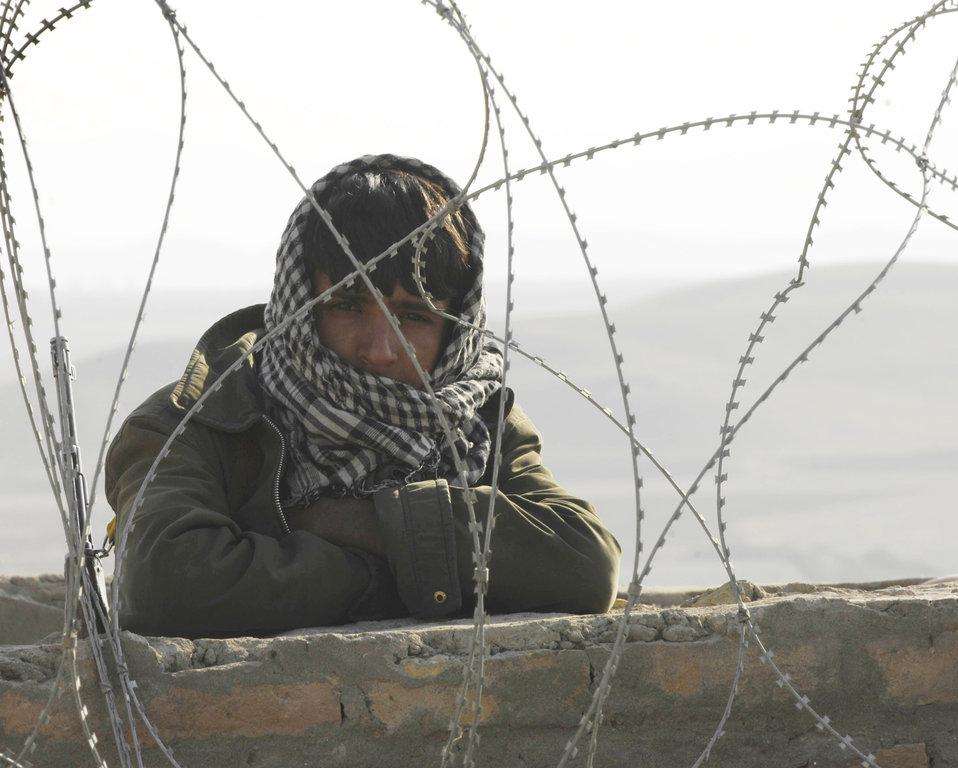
Security forces Airmen, Soldiers mentor Afghan prison guards

An Afghan guard peers out from behind the walls of a prison Oct. 28, 2009, in Qalat, Afghanistan. Security forces Airmen and American Soldiers met with prison officials Oct. 28, 2009, as part of an on-going mission to better the prison and mentor the guards.